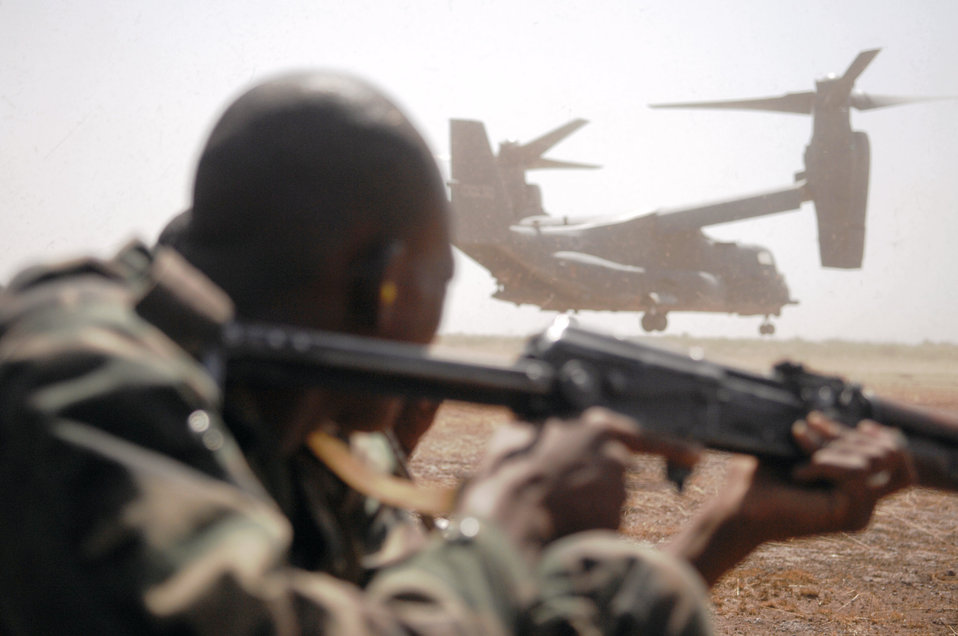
CV-22s complete first operational deployment

A Malian soldier takes a defensive position while an Air Force Special Operations Command CV-22 Osprey departs a landing zone as part of a drill for Exercise Flintlock in Bamako, Mali.